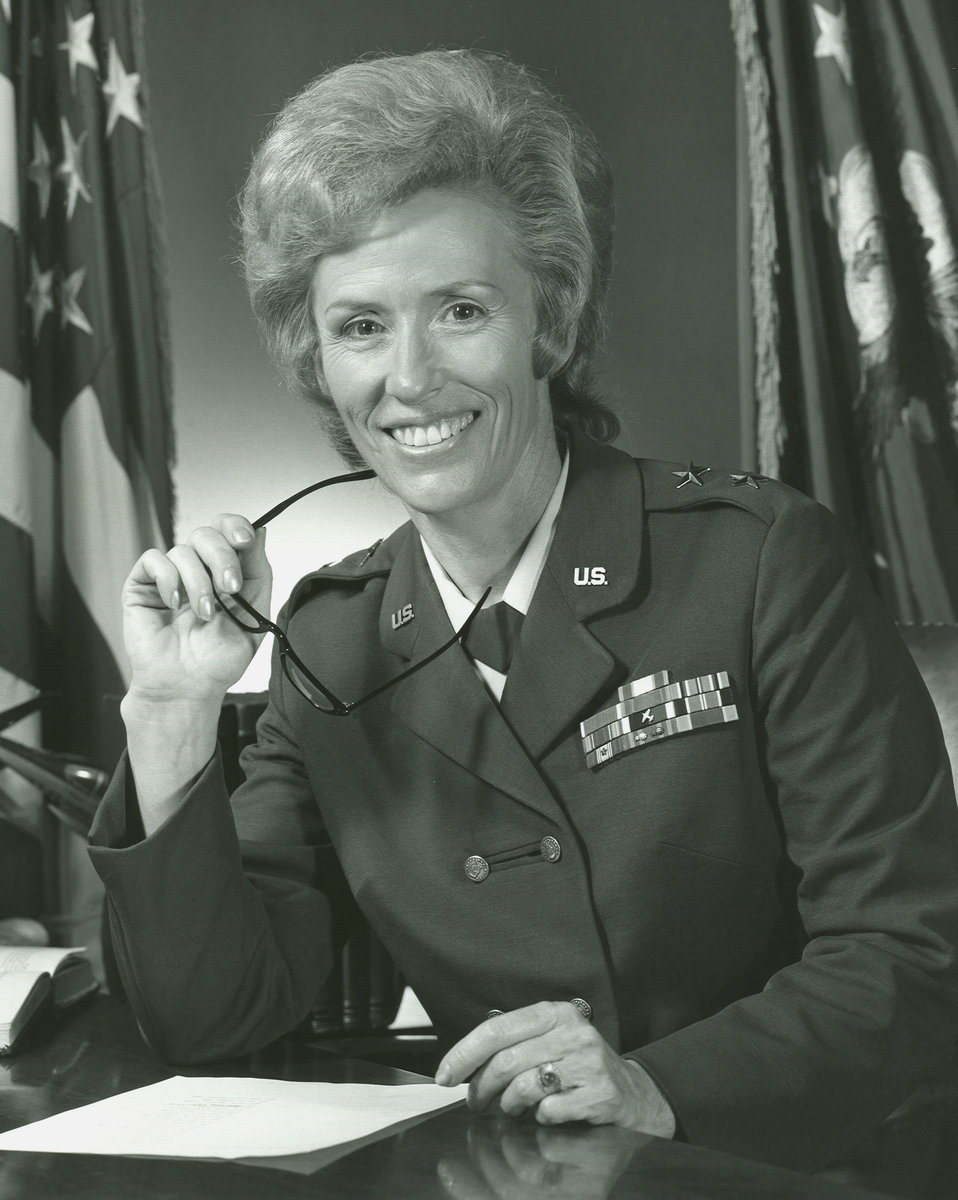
Maj. Gen. Jeanne M. Holm, first female general officer, was the director of Women in the Air Force.